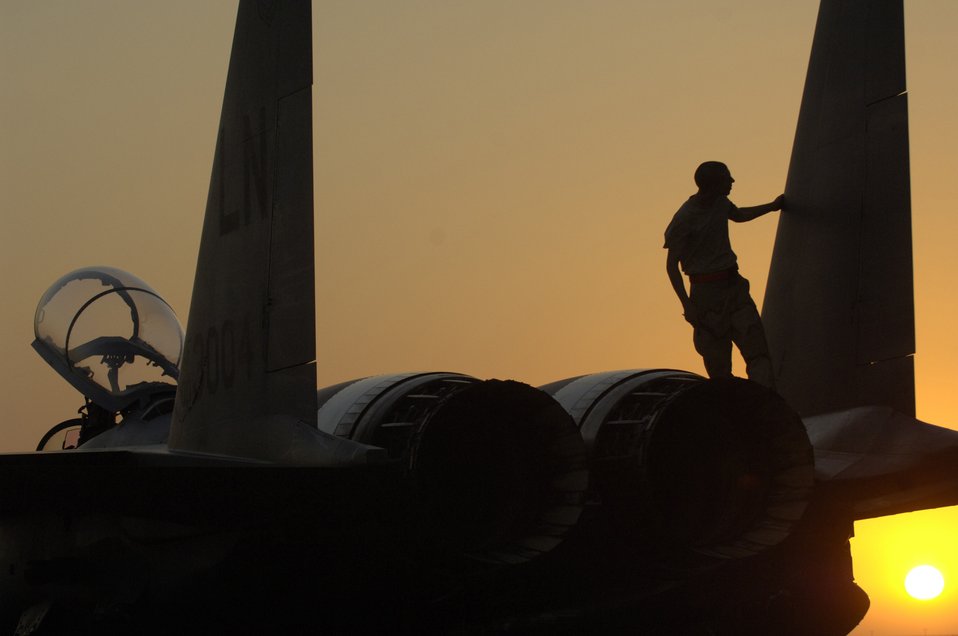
Strike Eagles have landed

Airman 1st Class Kevin Romer performs a post-flight inspection an F-15E Strike Eagle at a forward-deployed base in Southwest Asia Sept. 21. Airman Romer is an F-15E crew chief assigned to the 494th Aircraft Maintenance Unit.